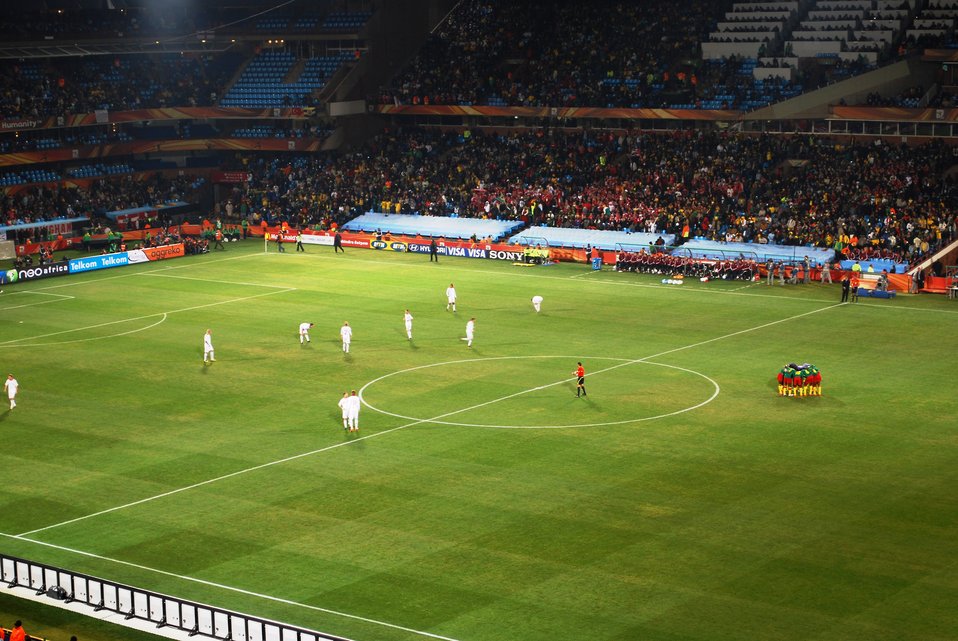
Danish and Cameroonian Players Prepare for Kickoff

The Danish and Cameroonian soccer players prepare the kickoff of their World Cup match at Loftus Versfeld Stadium in Pretoria, South Africa, on June 19, 2010.